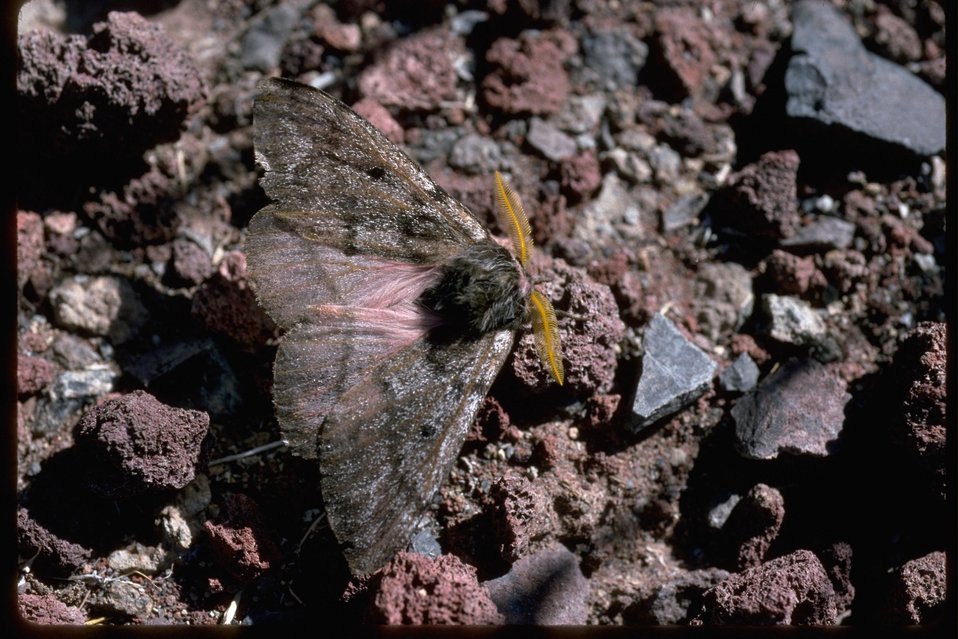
Moth on Rocks.